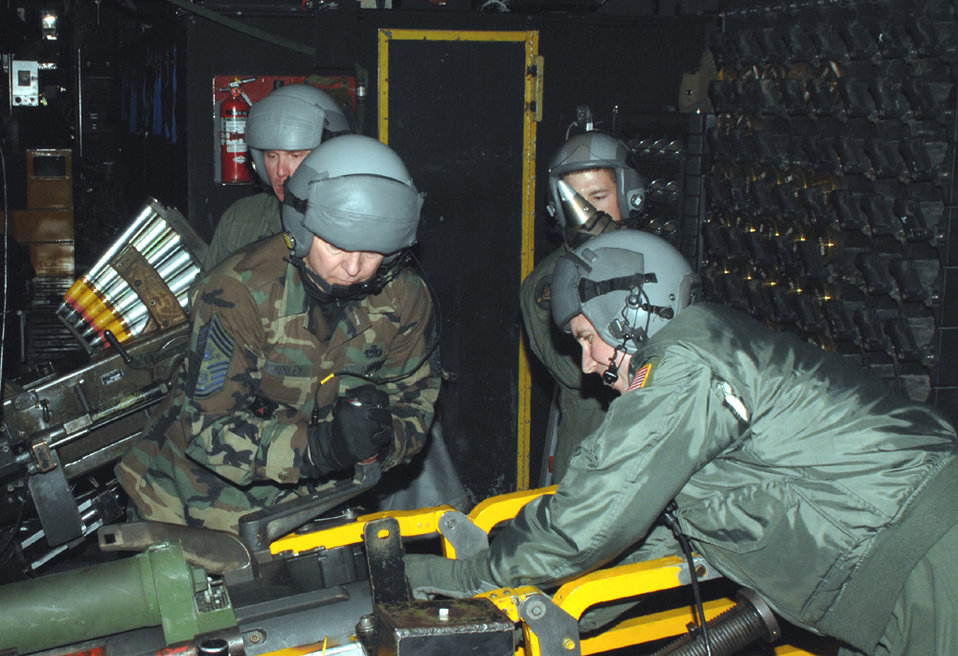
CMSAF Mckinley Visit

Chief Master Sgt. of the Air Force Rodney J. McKinley joins a 16th Special Operations Squadron gunner, Master Sgt. Preface Hedin, with loading the 105mm howitzer on the AC-130H Spectre gunship March 5, while Senior Airman Mathew Busman works the 40mm Bofors cannon and Staff Sgt. James Mobley oversees the process.